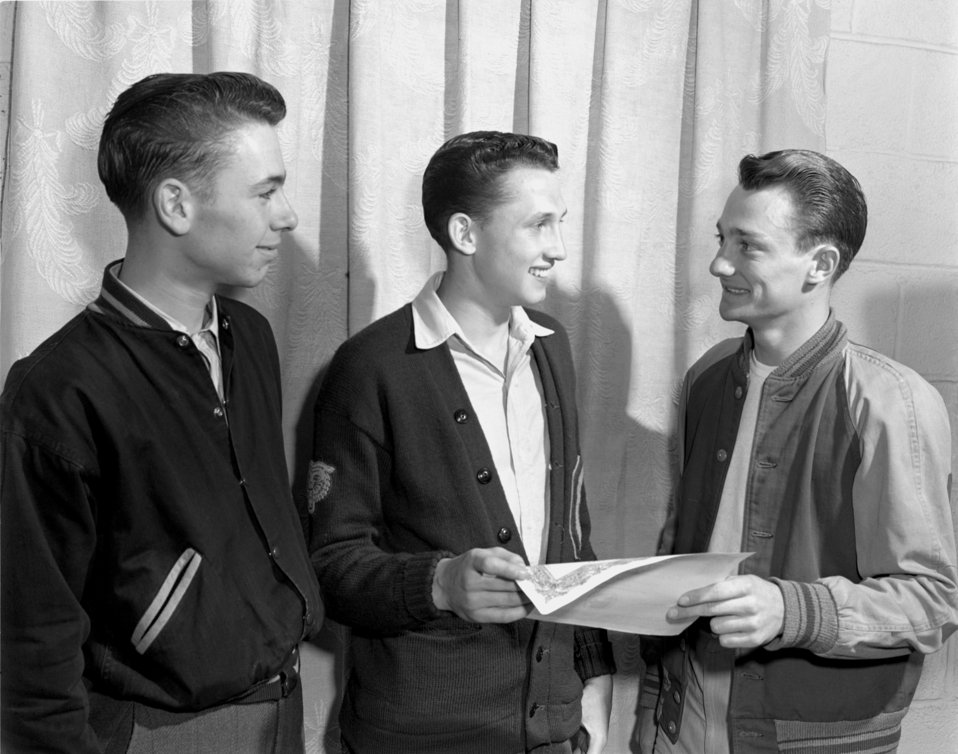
High School Paper Award Oak Ridge 1947

3409-1 DOE photo Ed Westcott 4-1947 Oak Ridge Tennessee